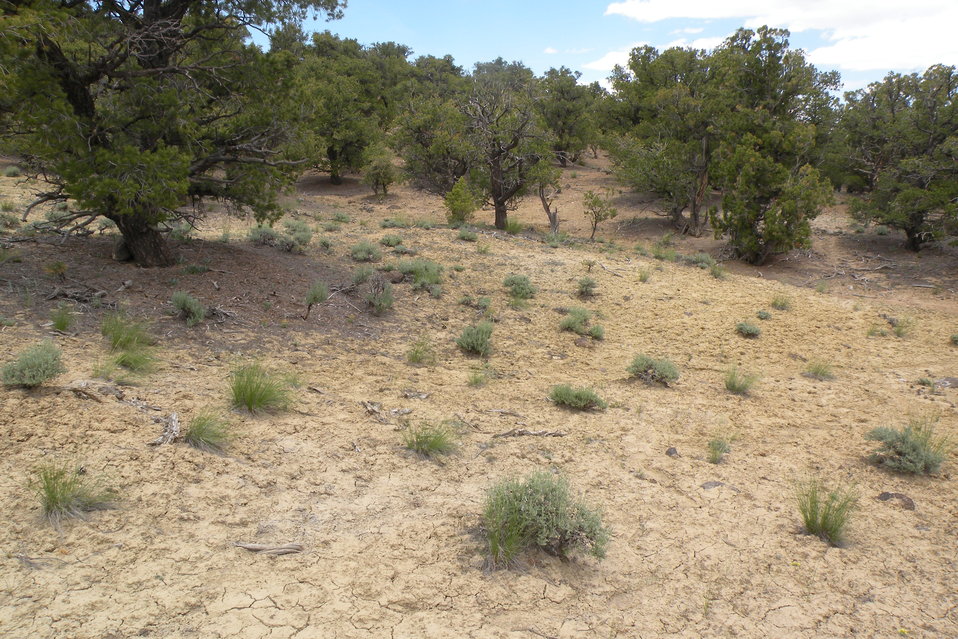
Last Chance townsendia (Townsendia aprica) is a diminutive perennial herb in the sunflower family. It is endemic to central Utah where it occurs in Emery, Sevier, and Wayne counties. The species is associated with piñon-juniper and grassland communities between 6,100 and 8,000 feet in elevation. Habitat loss, degradation, and fragmentation are the largest threats this species faces today. Sources of these threats include coal mining, road developments, recreational off-road vehicle use, and grazing. It was listed threatened in 1985.